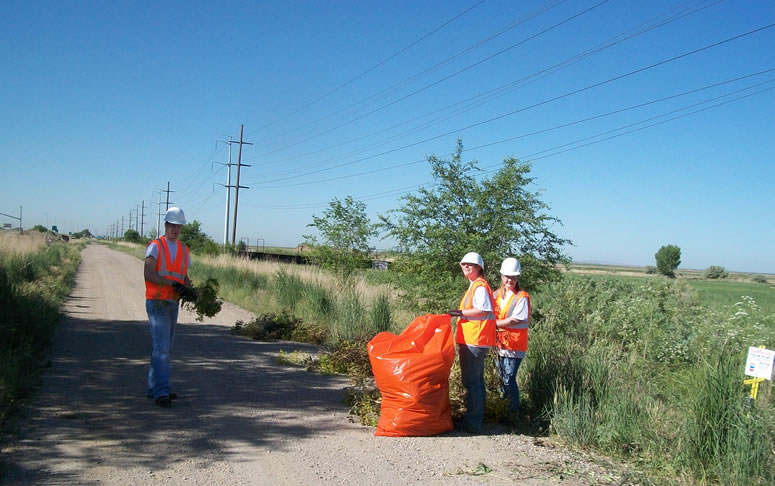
Performing weed control

During the first week the Youth Conservation Corps crew focused on invasive weed control, removing Dyer’s woad from the perimeter of the refuge to deter inward growth. The crew used tools to remove the weed by its roots and bagged the plants to eliminate any seed dispersal.